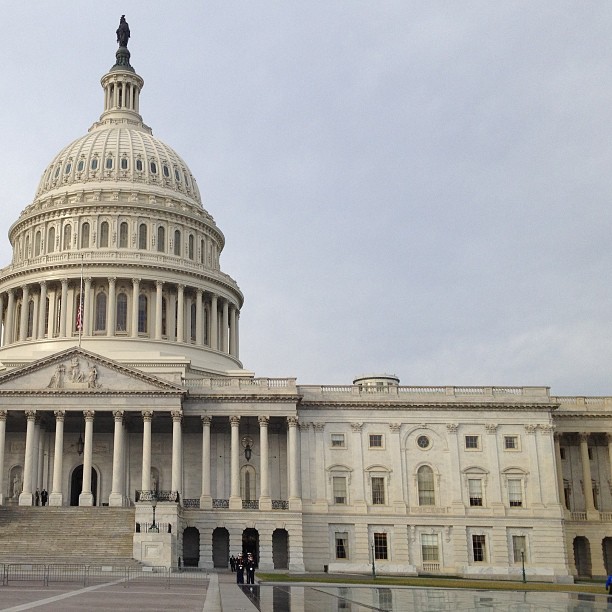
Awaiting arrival of Senator Inouye procession at the Capitol.